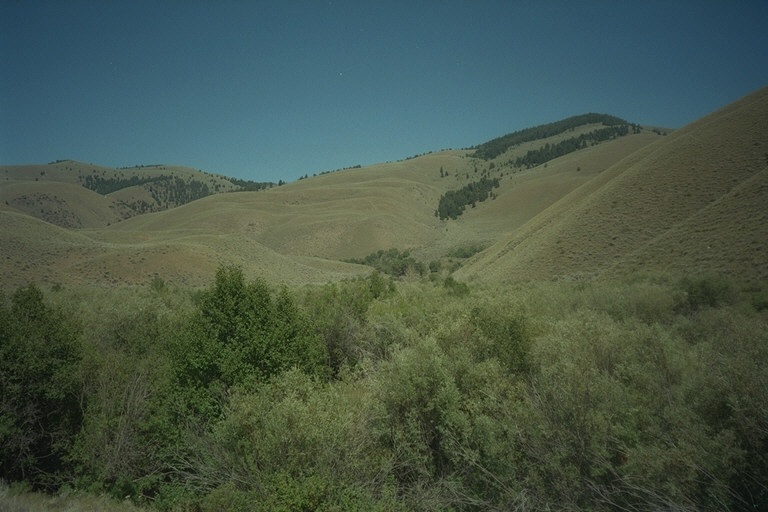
Riparian area Public Lands Salmon Field Office UCSC Upper Columbia Salmon Clearwater District